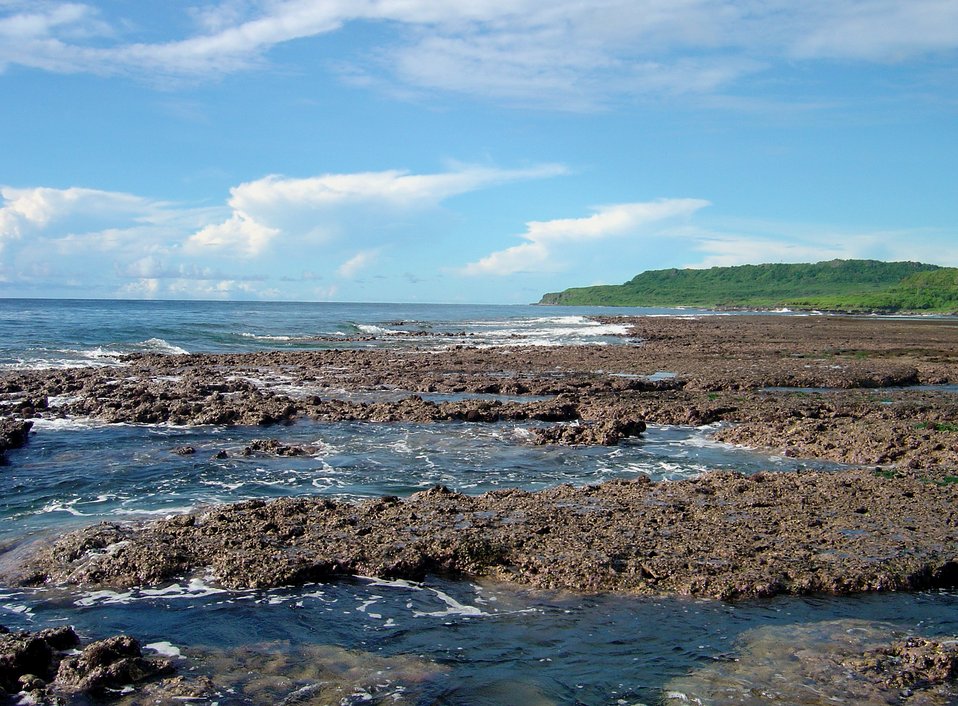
Uncovered reef flat with intervening channels at low tide on the Guam coastline.